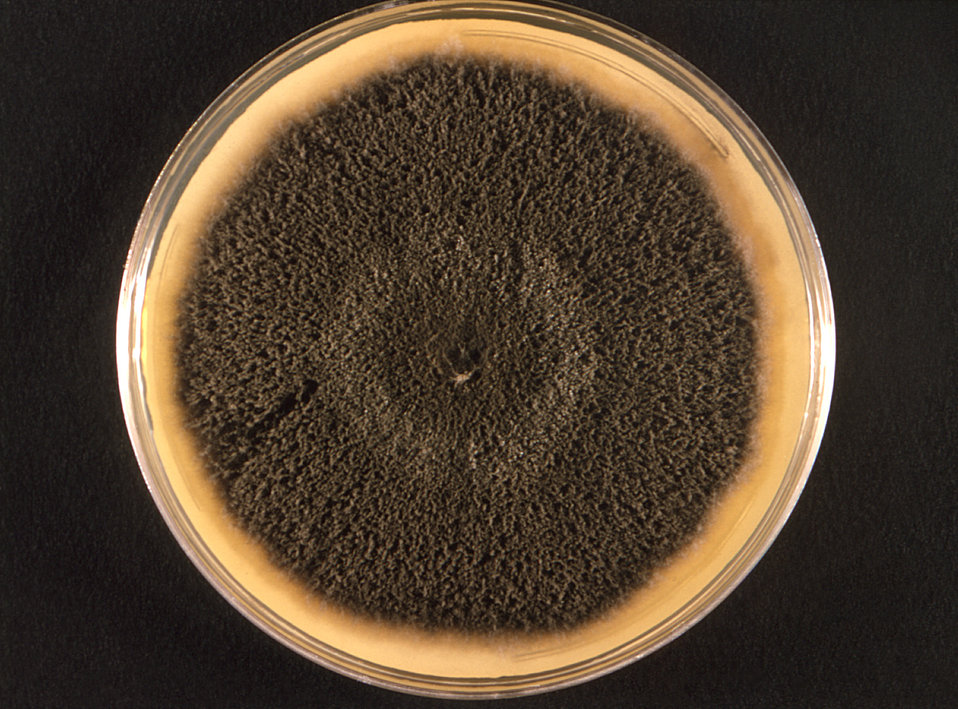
Photographed from the front, this 1971 image depicted a Petri dish within which a Bipolaris hawaiiensis fungal colony had been cultured. On its front surface, as depicted here, you'll note that the colonial texture appears 'woolly'. Normally, the reverse coloration appears as black, but is sometimes observed as brown with areas becoming black.